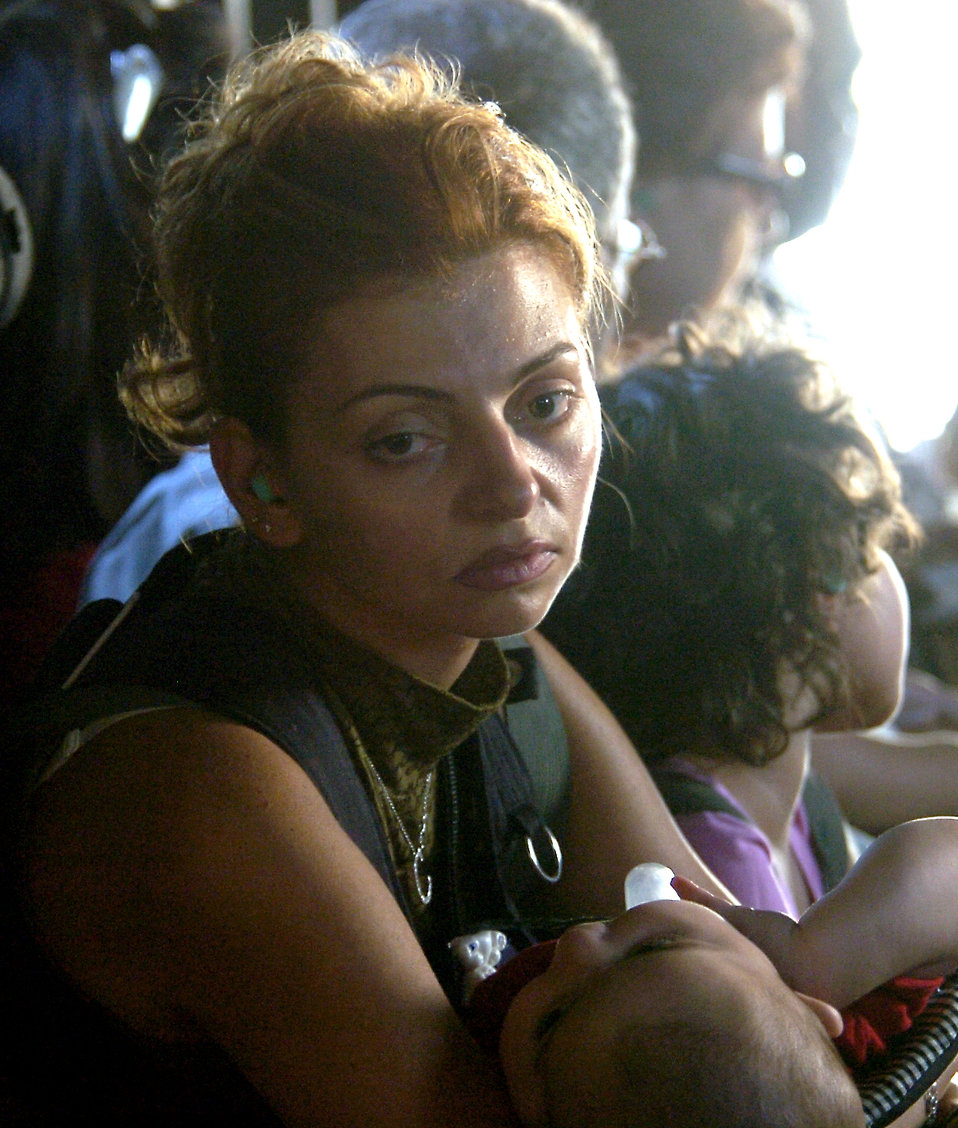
Lebanon operations

OVER LEBANON (AFPN) -- Carole Souaidan holds her infant son while she is airlifted out of Beirut, Lebanon by a MH-53M Pave Low helicopter from the 352nd Special Operations Group, July 24. The group, out of Royal Air Force Mildenhall, England, deployed to Cyprus to help with the transportation of American citizens from Lebanon.